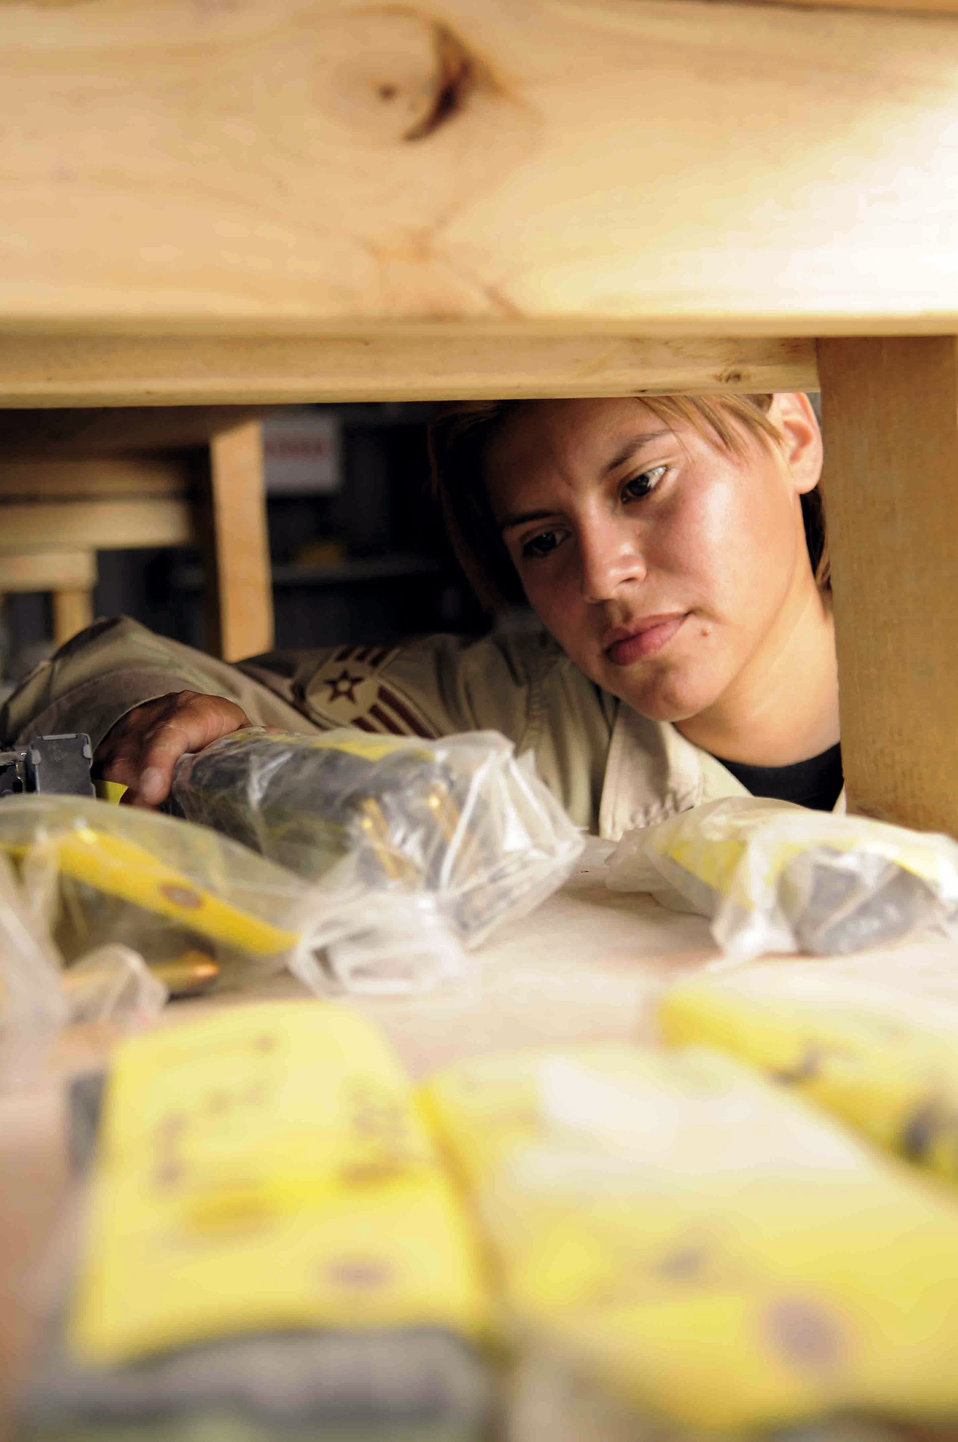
Distrution center saves lives, makes travel easier

Senior Airman Maria Bonilla inventories ammunition April 29 at a Southwest Asia air base. She regularly tracks more than 1,200 weapons and ammunition belonging to U.S. and coalition forces. Airman Bonilla is assigned to the 379th Expeditionary Logistics Readiness Squadron.